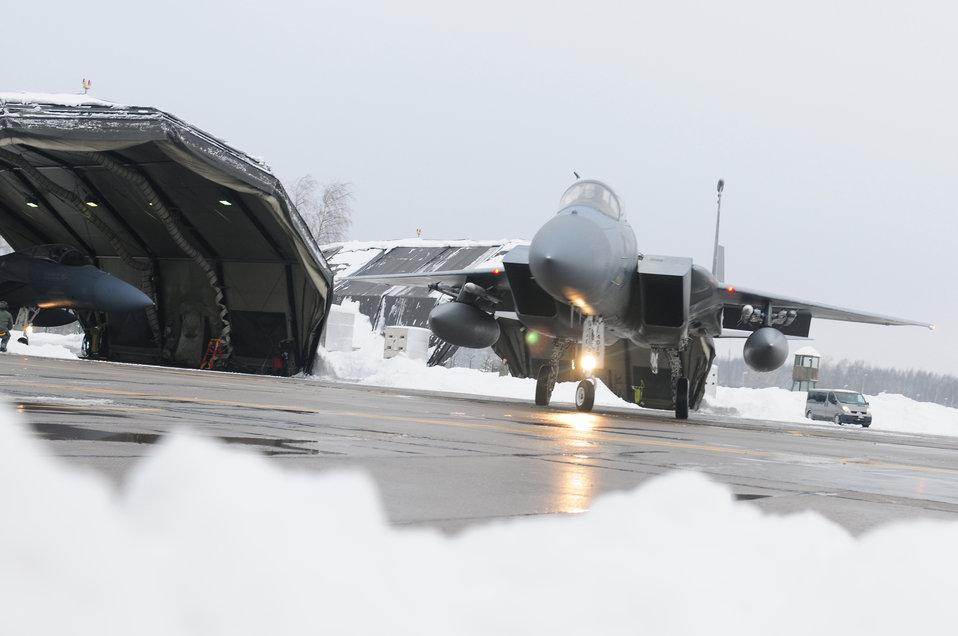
Baltic Air Mission

An F-15C Eagle from the 493rd Expeditionary Fighter Squadron taxis before flying to its home station of Royal Air Force Lakenheath, England, upon finishing a rotation of NATO's Baltic air policing mission. The 493rd EFS assumed command of the mission from the Polish Sept. 1, 2010 and relinquished it to the German air force Jan. 5, 2011.